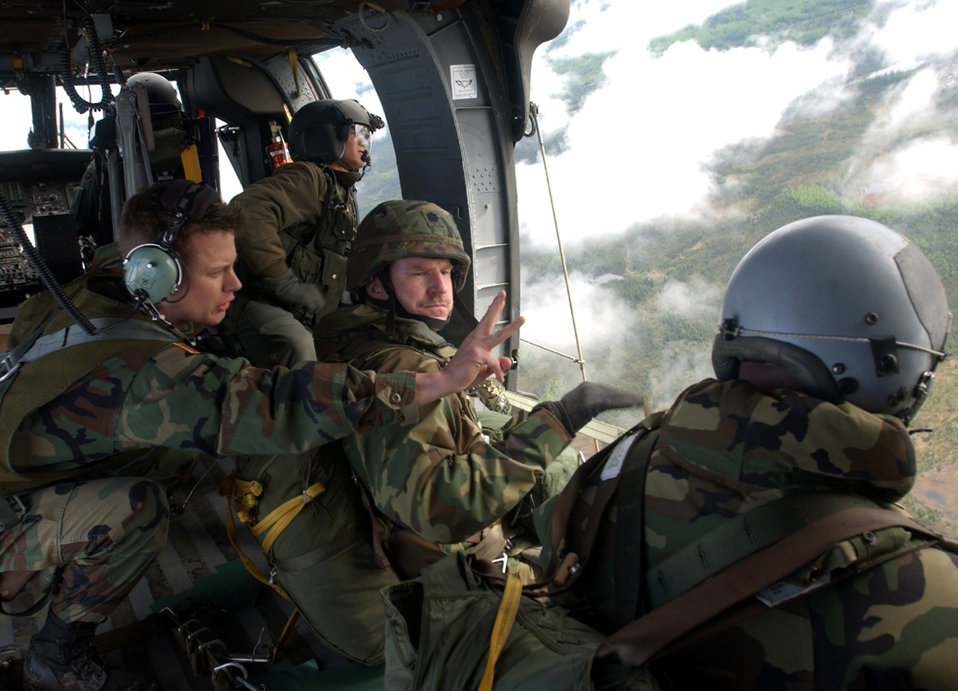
Jumpers ready?

OVER ALASKA -- Army Sgt. 1st Class Mark Koopman gives Lt. Col. Brooks Wright and other Airmen a three-minute warning until jump time from a Blackhawk helicopter during training May 25. The Airmen are assigned to the 3rd Air Support Operations Squadron at Fort Wainwright Army Airfield, Alaska. Sergeant Koopman is also stationed at Fort Wainwright.